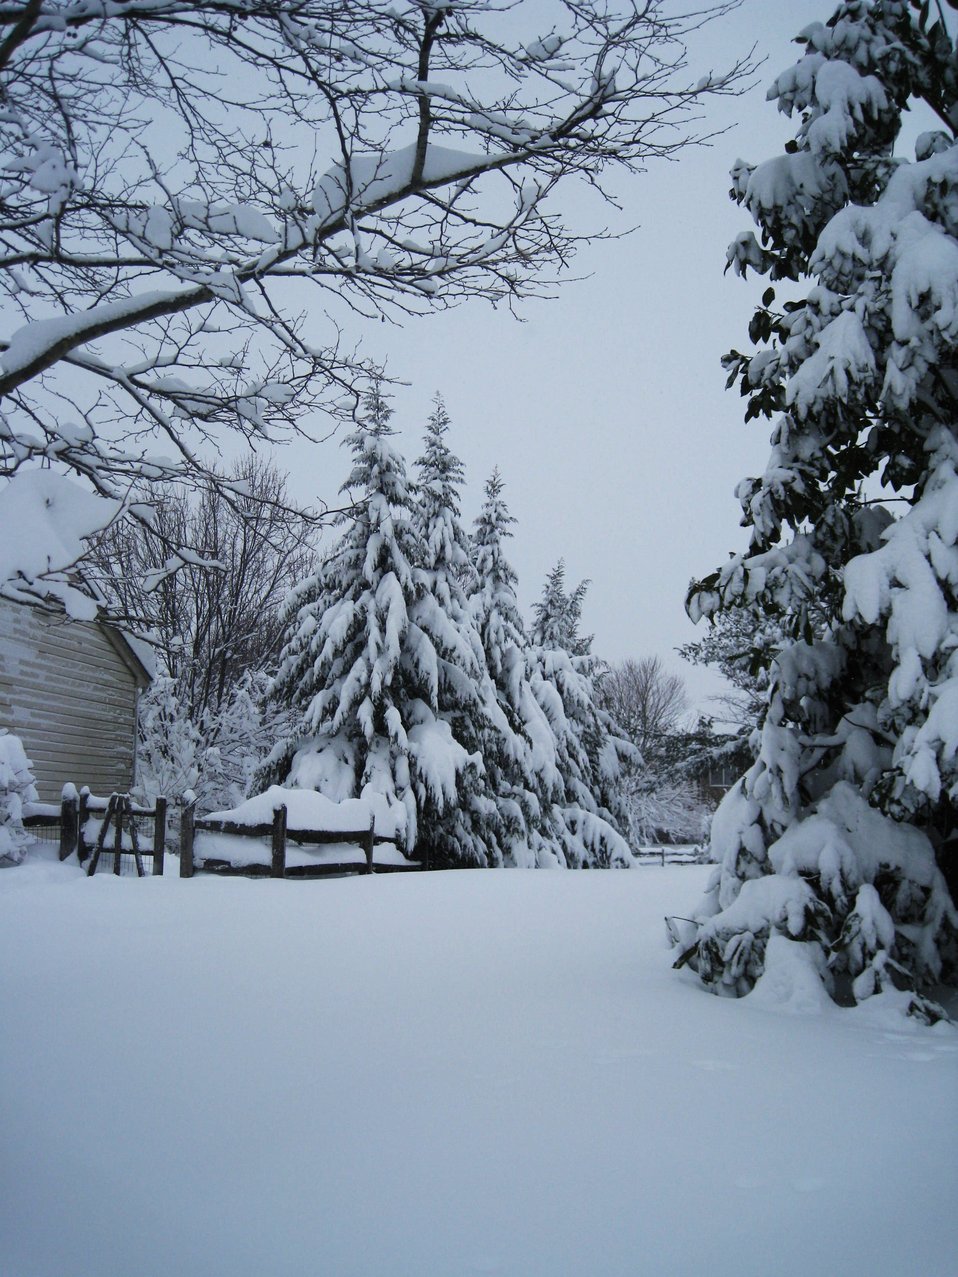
Fir trees remain vertical following second two-foot snow of winter season.